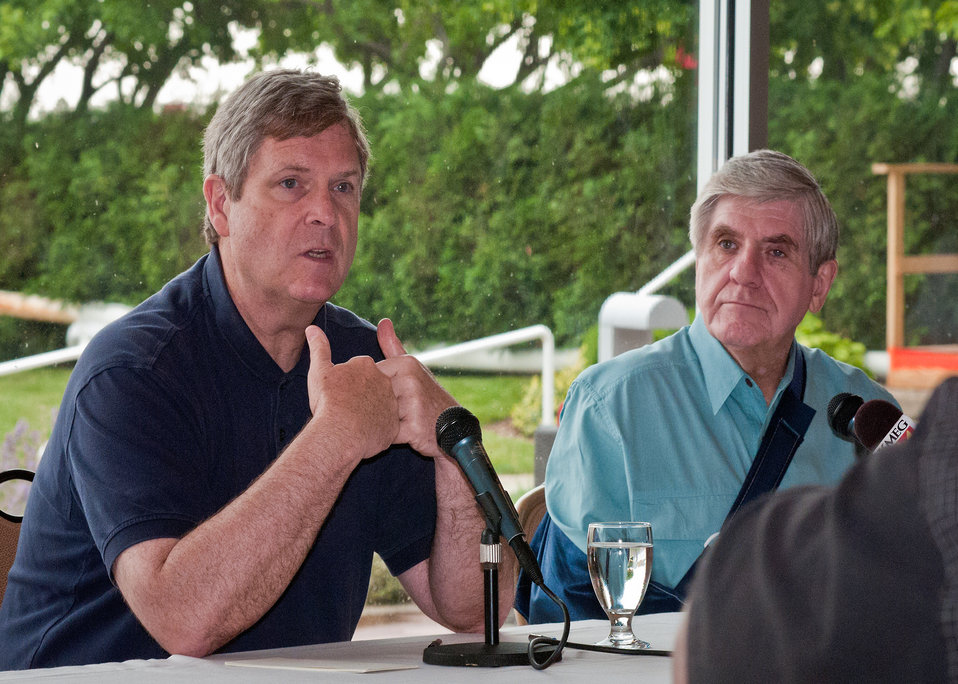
Agriculture Secretary Tom Vilsack (left) and Senator Ben Nelson (right), Nebraska, a member of the Senate Committee on Agriculture, Nutrition and Forestry held a town hall meeting at the Marina Inn in South Sioux City, Nebraska Friday, June 17, 2011, on the floodwaters along the Missouri River affecting Iowa and Nebraska. The goal of the meeting with the producers and community leaders is to get a firsthand look and provide information back to Washington to better deliver disaster programs quickly to effectively respond to this disaster. The meeting provided the information necessary for USDA agencies to implement programs to assist producers as they assess recovery efforts. USDA administers many programs to assist with recovery in rural areas reeling from natural disasters.